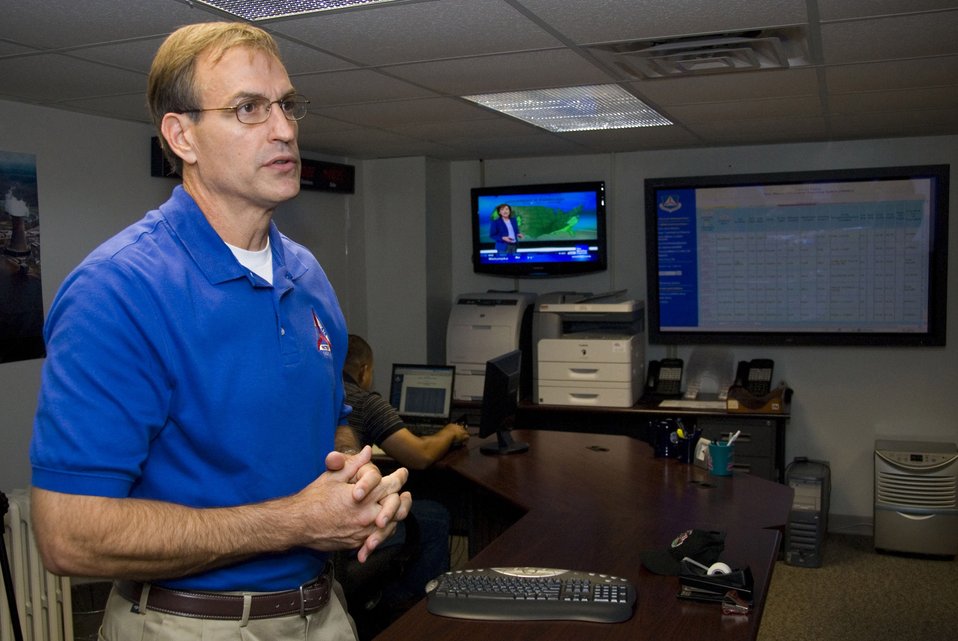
CAP provides rescue resources during emergencies

John Salvador, Civil Air Patrol's director of operations, explains the capabilities of the CAP National Operations Center at Maxwell Air Force Base, Ala., Sept. 16. The center is CAP's communication hub during disaster relief operations.